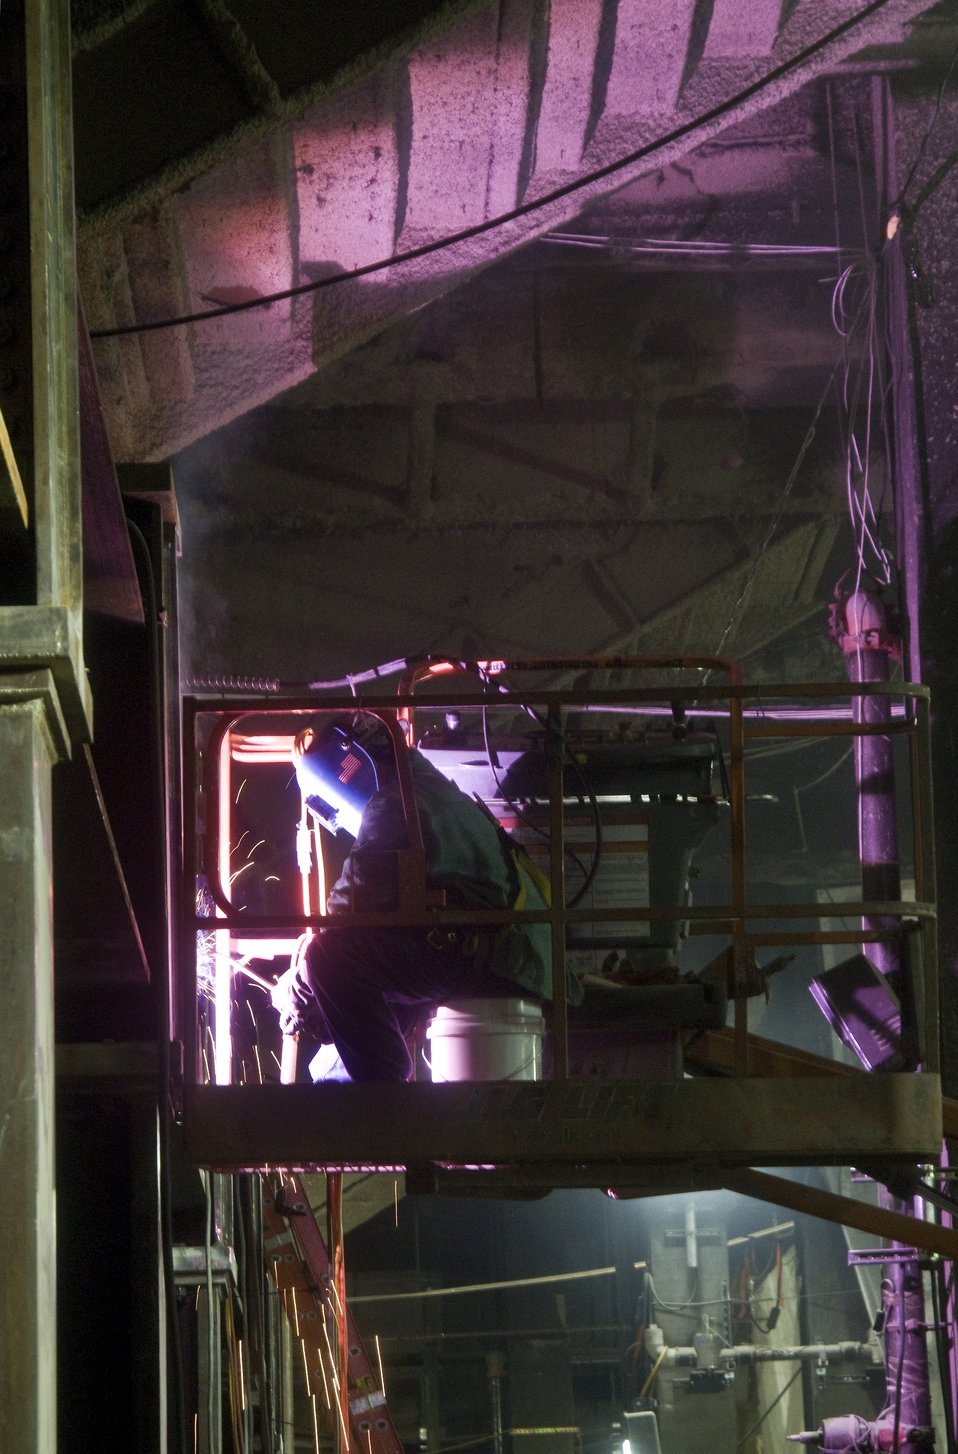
a welder at work on what will be the passenger concourse of the new LIRR station.

The East Side Access project will connect the Long Island Rail Road’s (LIRR) Main and Port Washington lines in Queens to a new LIRR terminal beneath Grand Central Terminal in Manhattan. The new connection will increase the LIRR’s capacity into Manhattan, and dramatically shorten travel time for Long Island and eastern Queens commuters traveling to the east side of Manhattan.